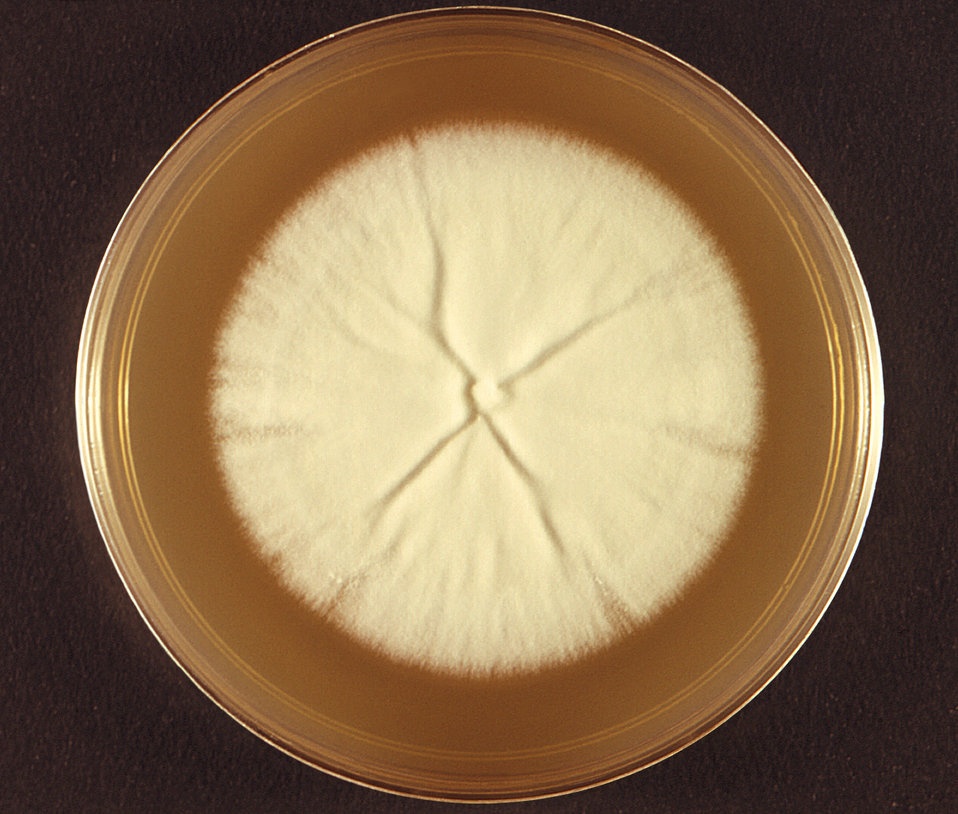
This image depicts the front view, of a Petri dish culture in which was growing the teleomorph, or end-stage phase, of the fungal organism, Trichophyton mentagrophytes. A dermatophytic fungus, this teleomorphic phase is also known as, Arthroderma benhamiae. See PHIL 12650, for a view of this colony from the reverse view, or view from bottom.